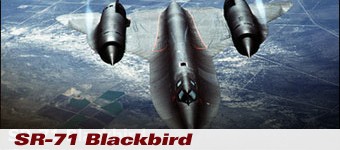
SR-71

The SR-71